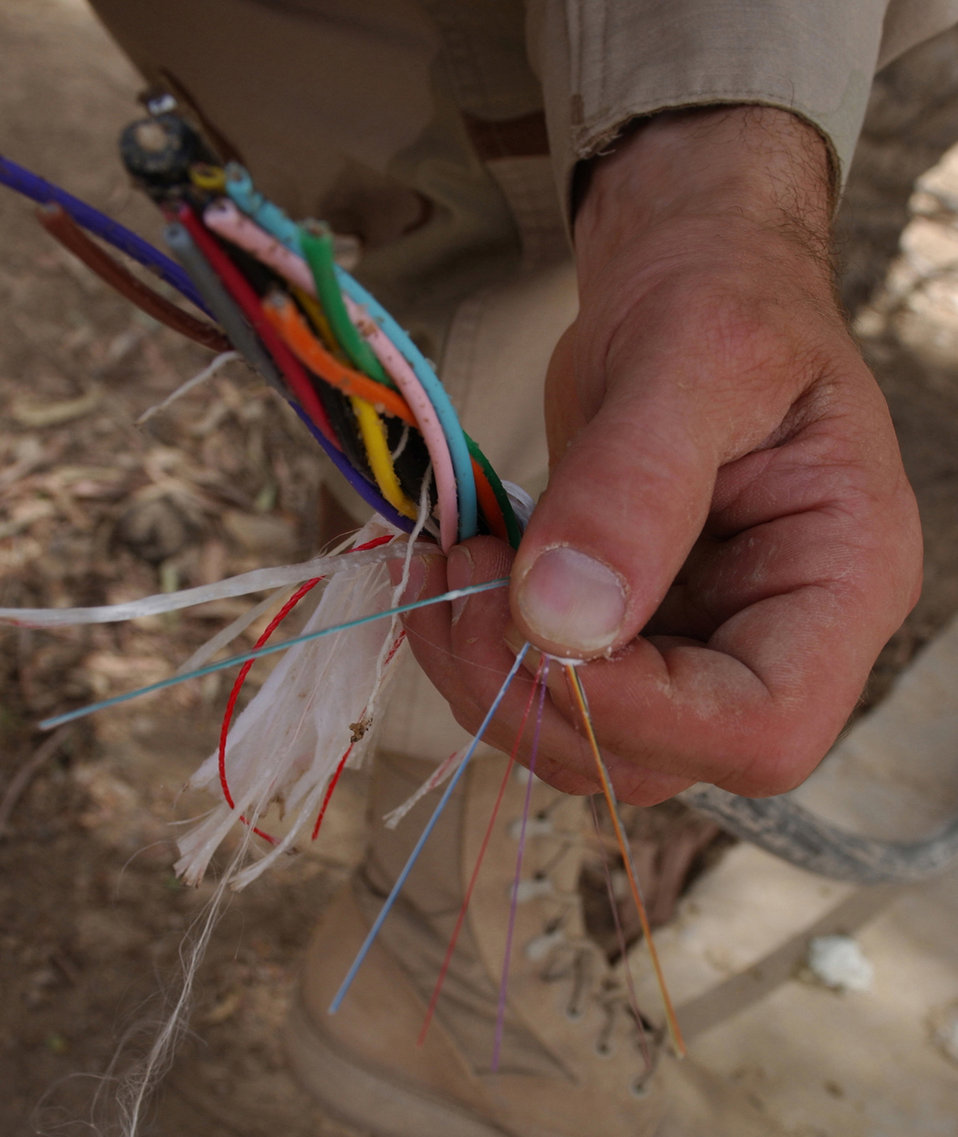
Airmen, Soldiers open lines of communication

BAGHDAD, Iraq -- More than 22 miles of 144-strand fiber optic cable will be installed here to provide state-of-the-art communication among coalition compounds. Each fiber optic strand is made of optically pure glass and is thinner than a human hair.